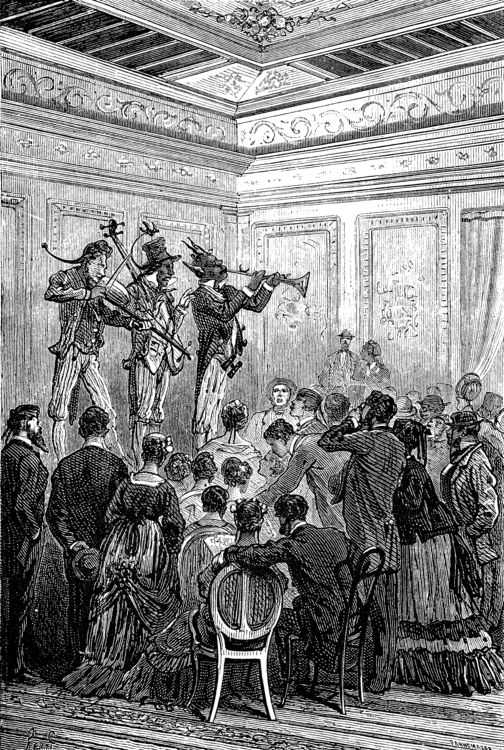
An illustration from Jules Verne's novel 'A Floating City' (1869) drawn by Jules Férat. Polski: Ilustracja powieści Juliusza Verne'a 'Pływające miasto' (1869) autorstwa Julesa Férata. Français : Jules Verne: 'Une Ville flottante' (1869), dessins par Jules Férat. Orginal text: Français : Des chanteurs ambulants.